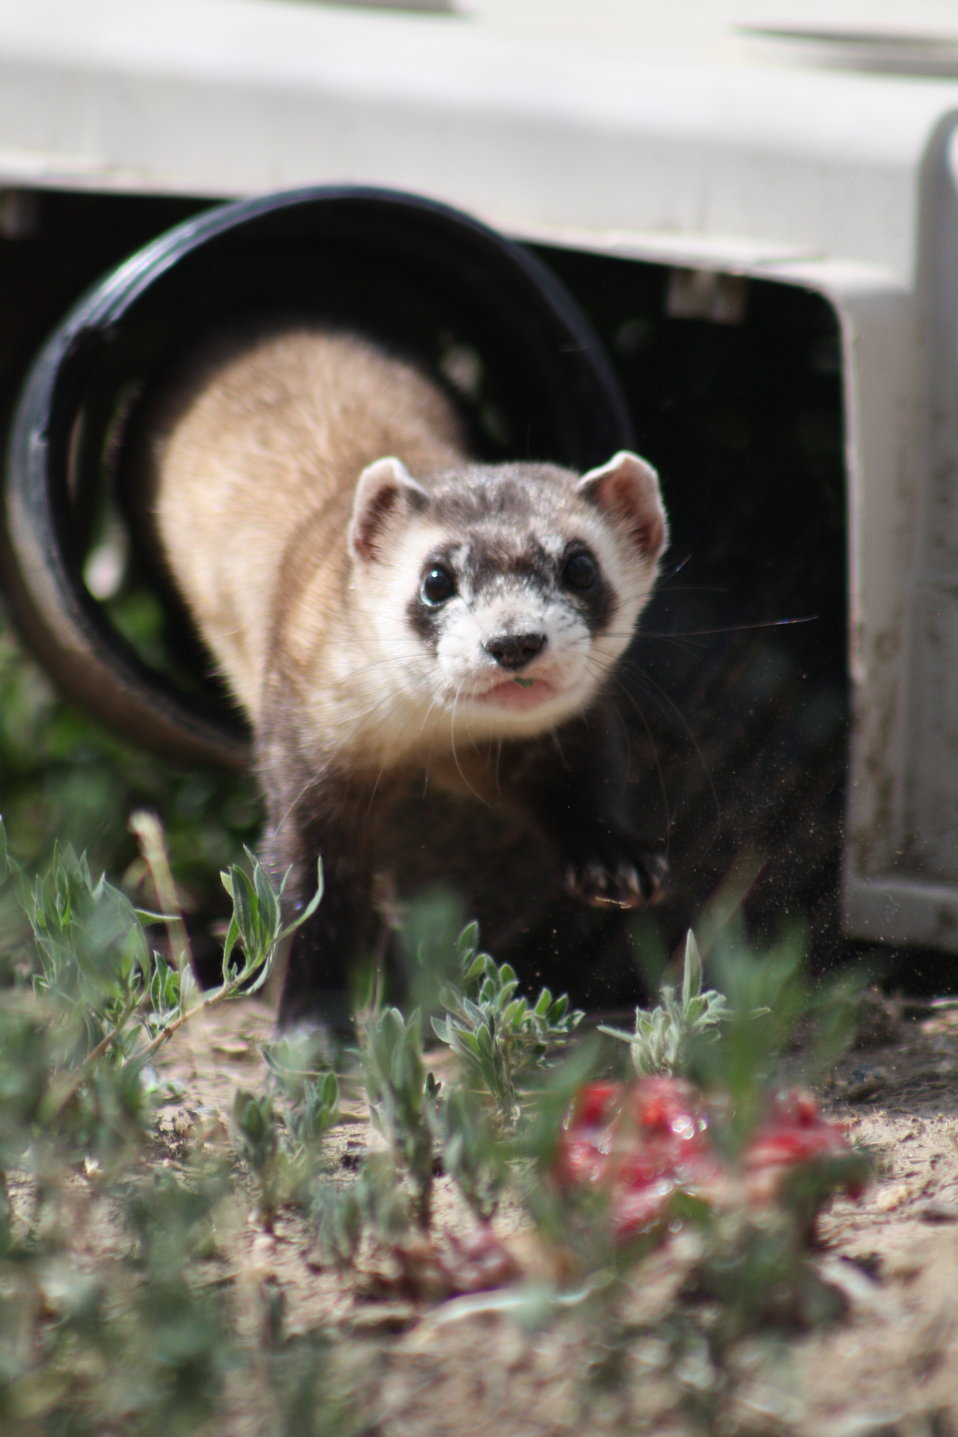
Interns visit the NBFFCC

In the summer of 2012, USFWS Region 6 interns visited the National Black-footed Ferret Conservation Center (NBFFCC) in Colorado to learn how the program reintroduces the endangered Black-footed ferret back into its native habitat.